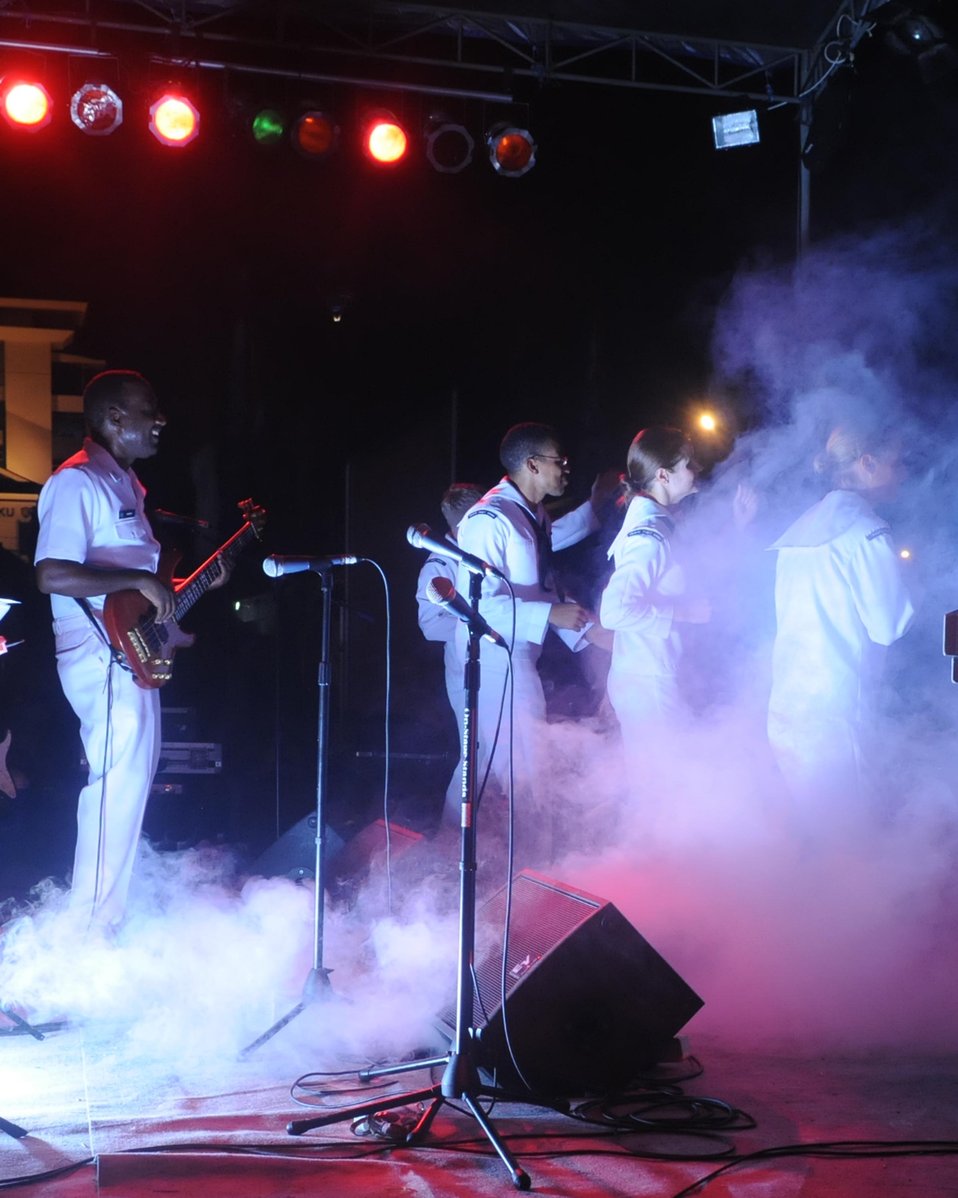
The U.S. Pacific Fleet Band Plays for Indonesian Spectators

The U.S. Pacific Fleet band, embarked aboard the Military Sealift Command hospital ship USNS Mercy (T-AH 19), plays for several thousand Indonesian spectators during a concert in downtown Ambon, Indonesia, on July 29, 2010. Mercy is in Ambon participating in Sail Banda 2010, a series of events hosted by the Government of Indonesia to promote the future of small islands. Mercy’s participation features medical and dental care clinics and construction projects in and around Ambon, as well as on Seram Island.